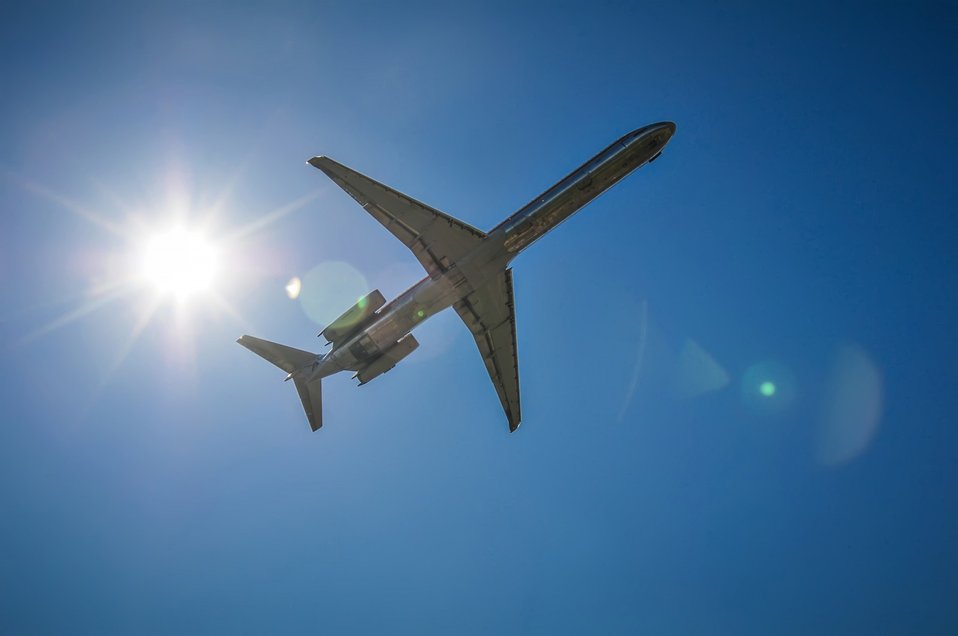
Jet airplane in the sky with sun.